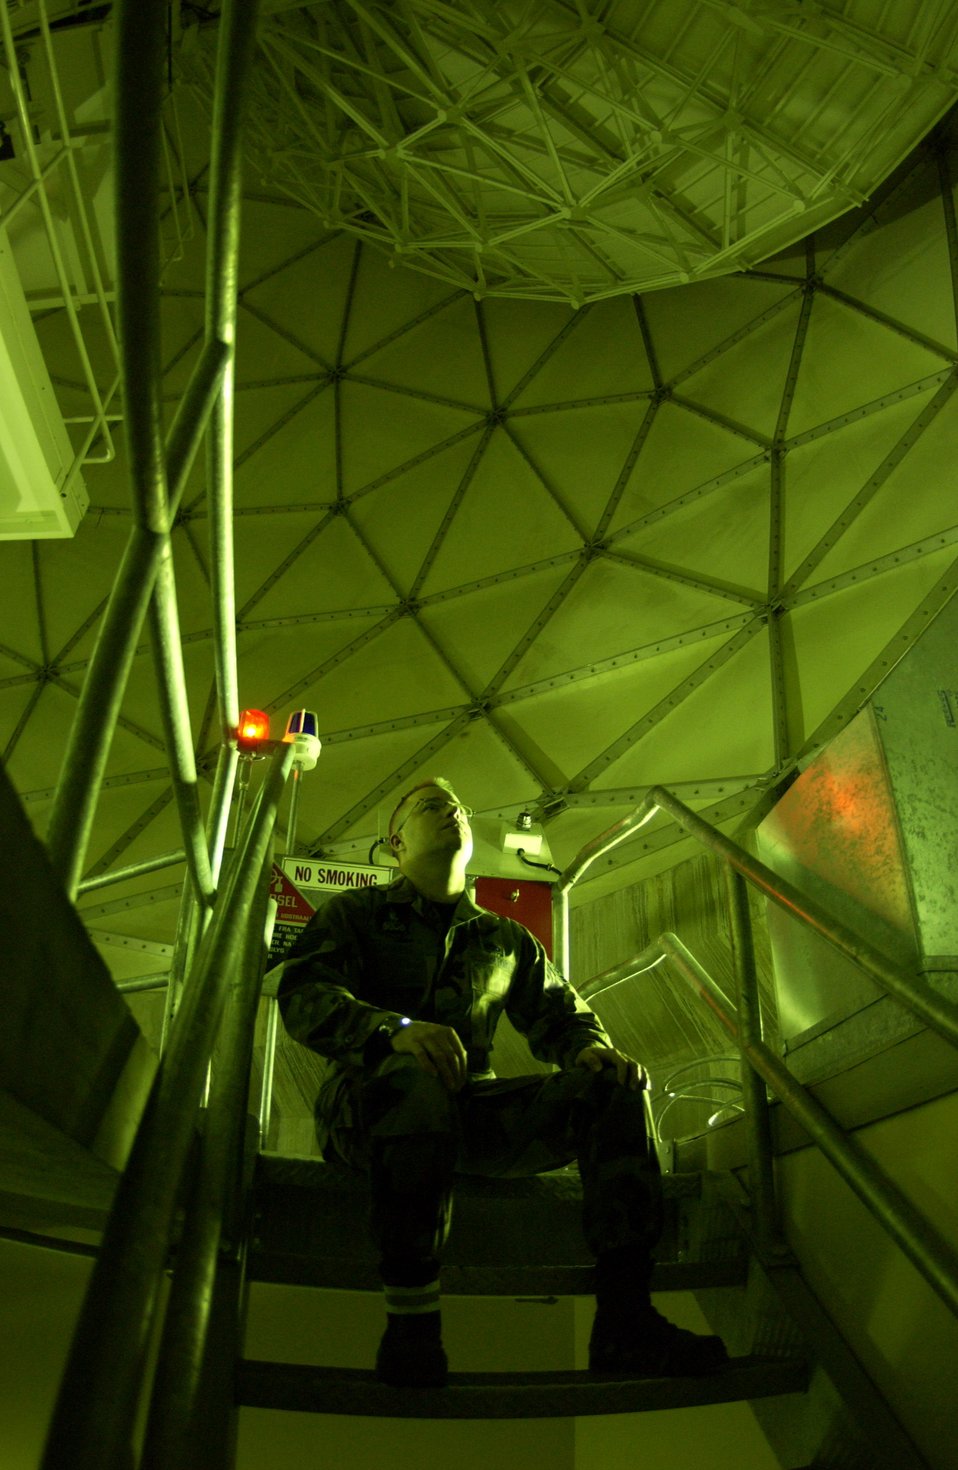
Future is bright for Air Force space assets

Tech. Sgt. Bryan Schubert watches a moving satellite dish inside one of the